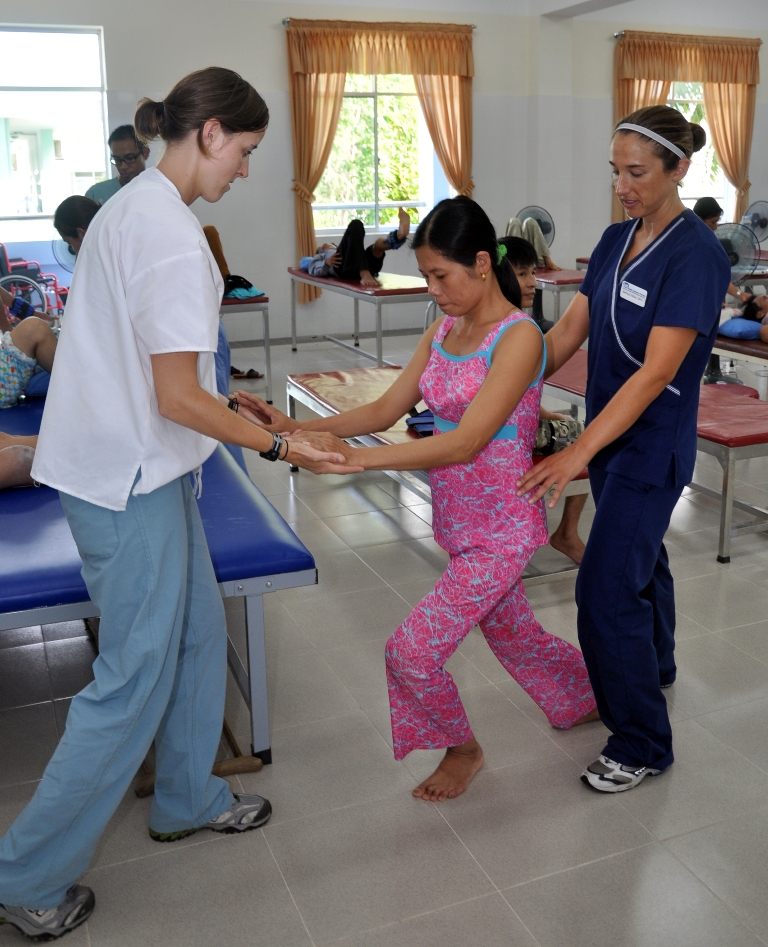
USAID assists persons with disabilities in Vietnam